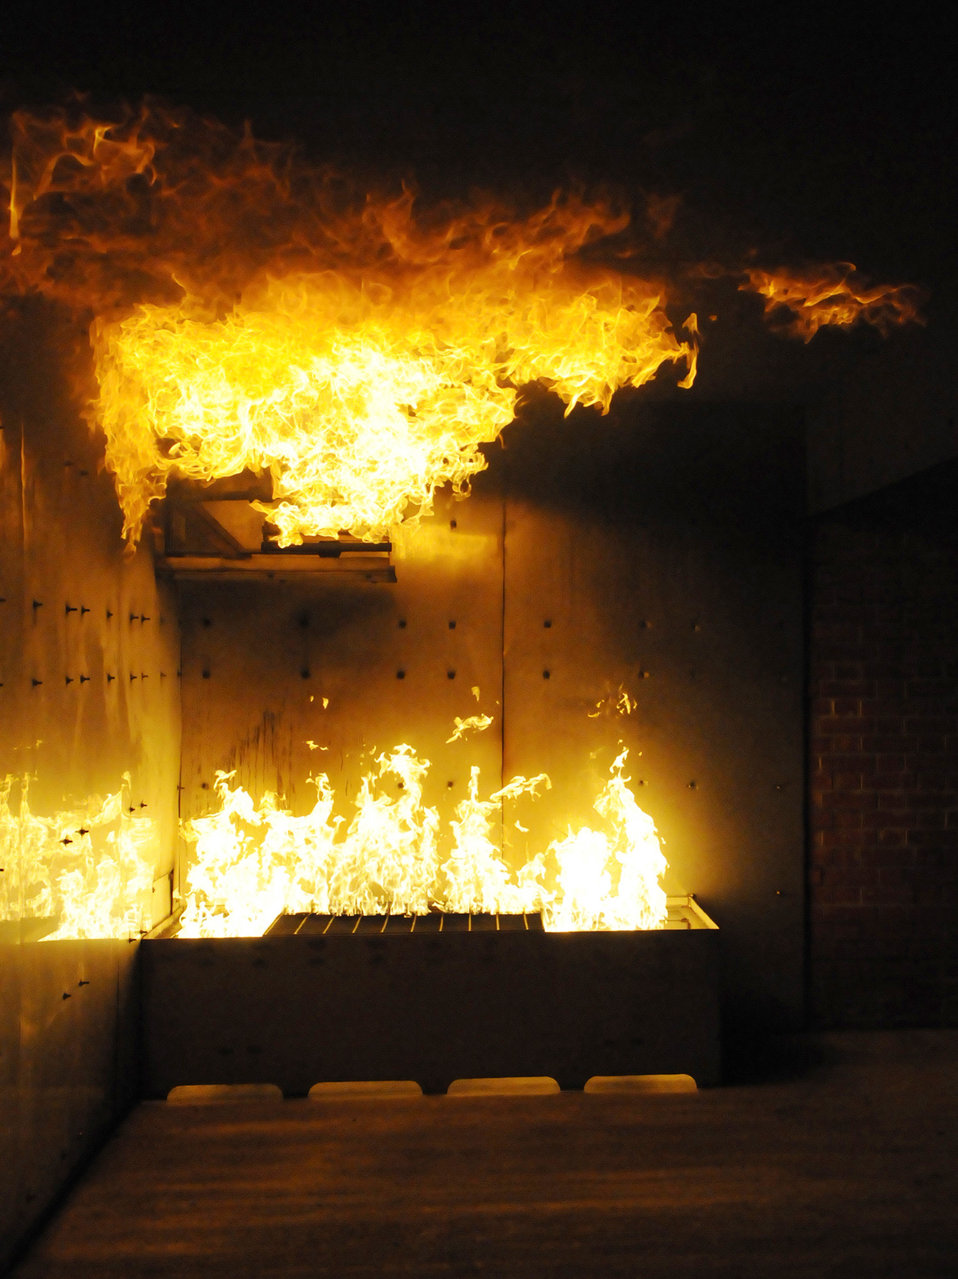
Working the night shift

Raging fire awaits firefighters at the